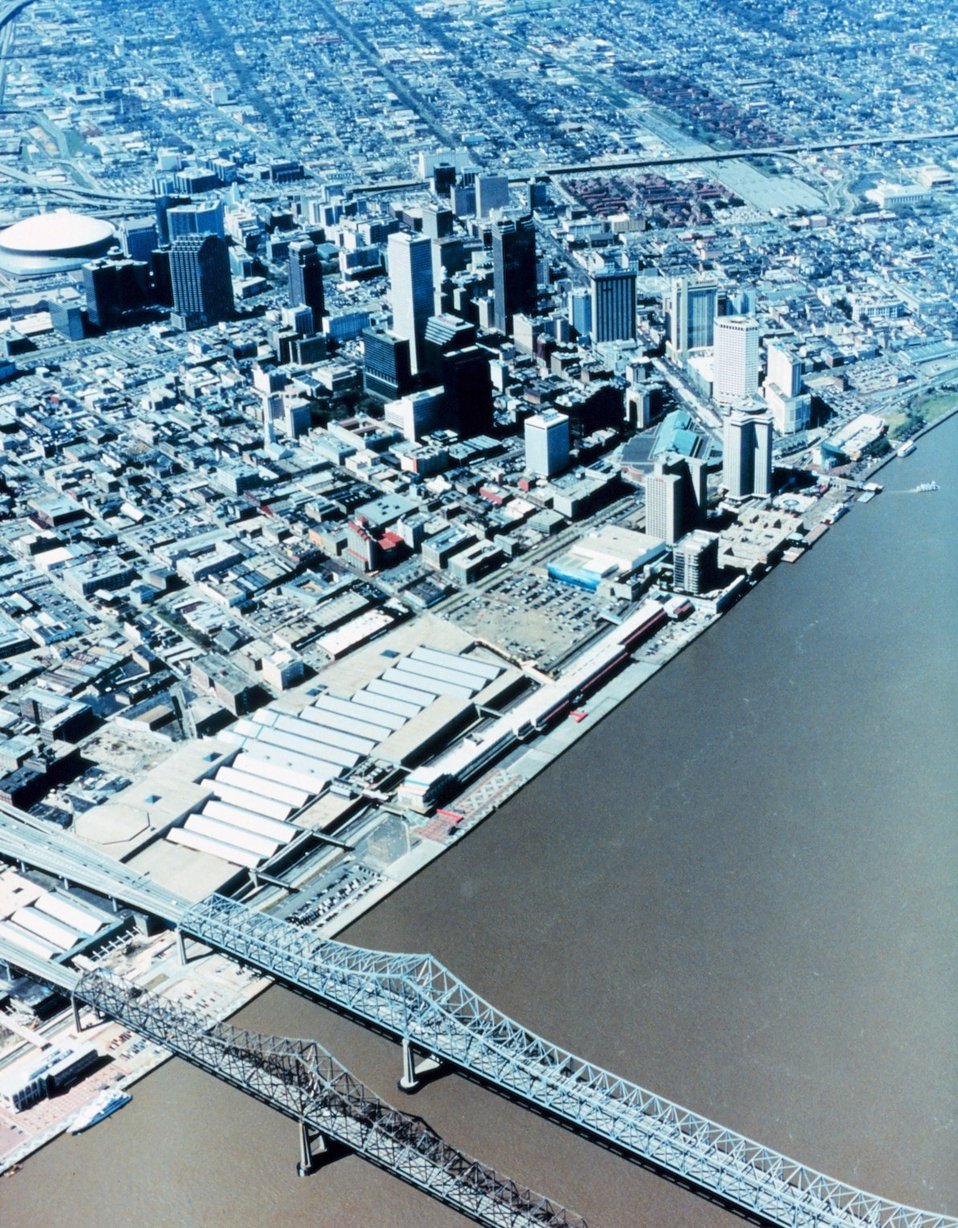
2957 North Latitude 9005 West Longitude.